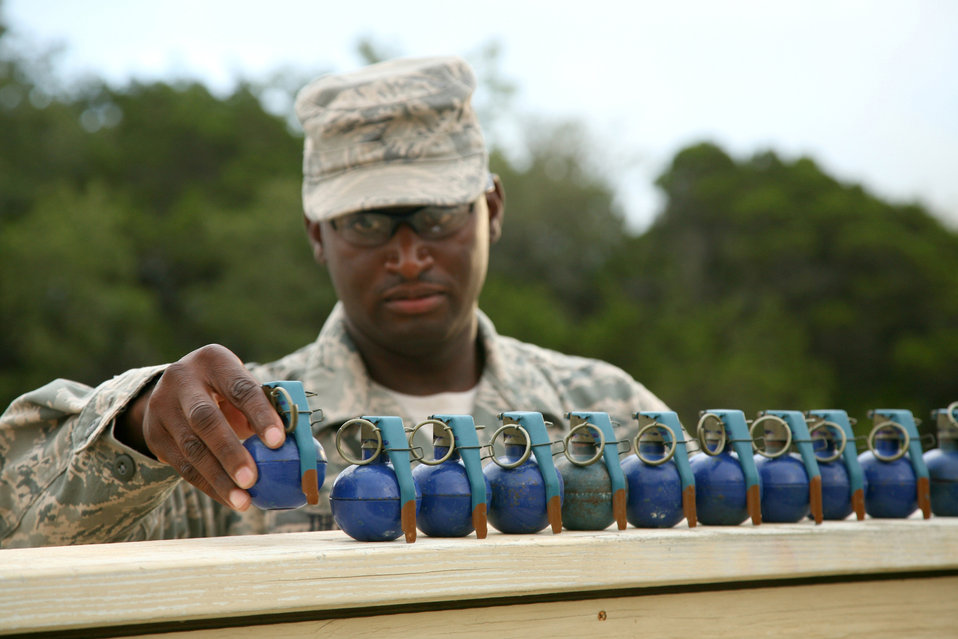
All in a row

Tech. Sgt. Eric Thomas, an instructor with the 343rd Training Squadron, preps M-67 hand grenade training simulators June 18 at Camp Bullis, Texas. Security forces officer students will practice throwing the simulated grenades to hone their technique as instructors evaluate before moving on to live ordnance.